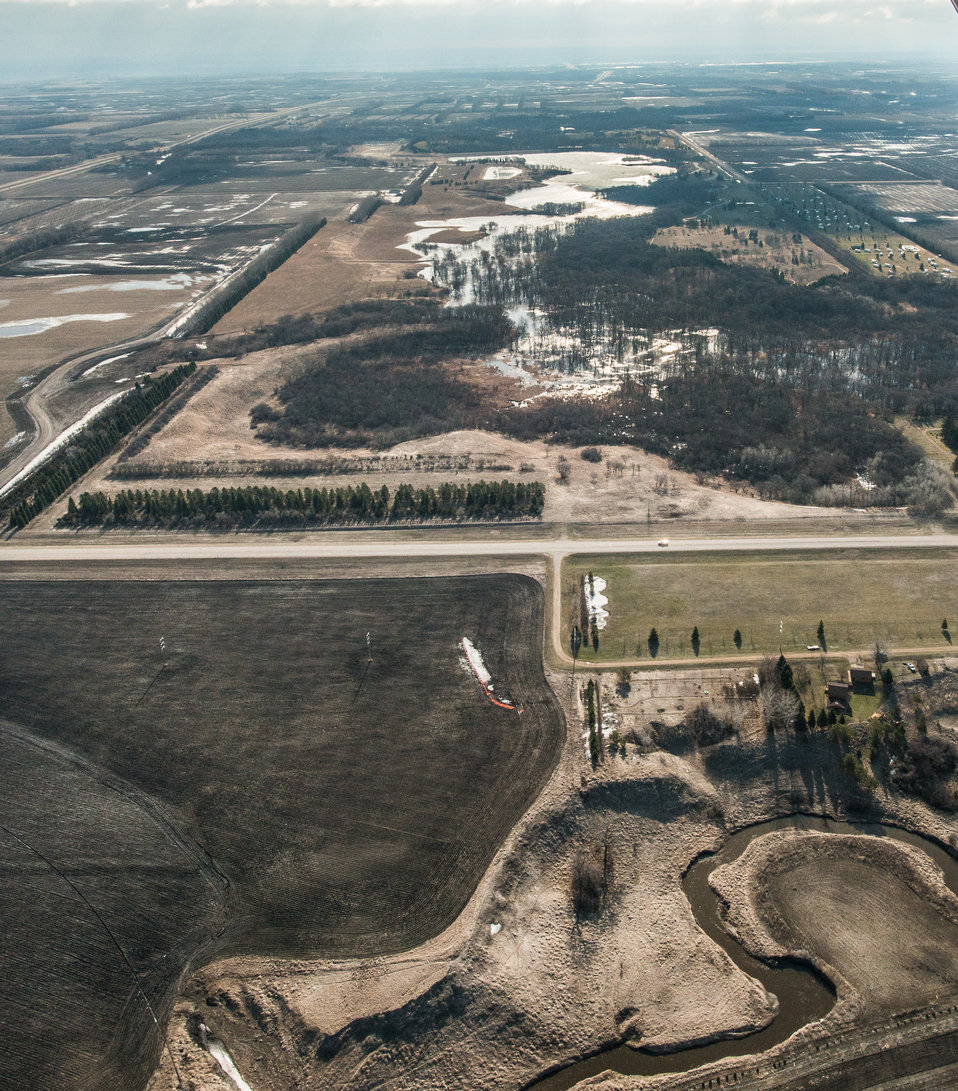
Larimore Dam, a Public Law PL83-566 Small Watershed Program, in Grand Forks County, ND, on Wednesday, May 1, 2013. To learn about the Red River Basin Initiative, see www.mn.nrcs.usda.gov/news/features13/RRBI.html USDA Photo by Lance Cheung.